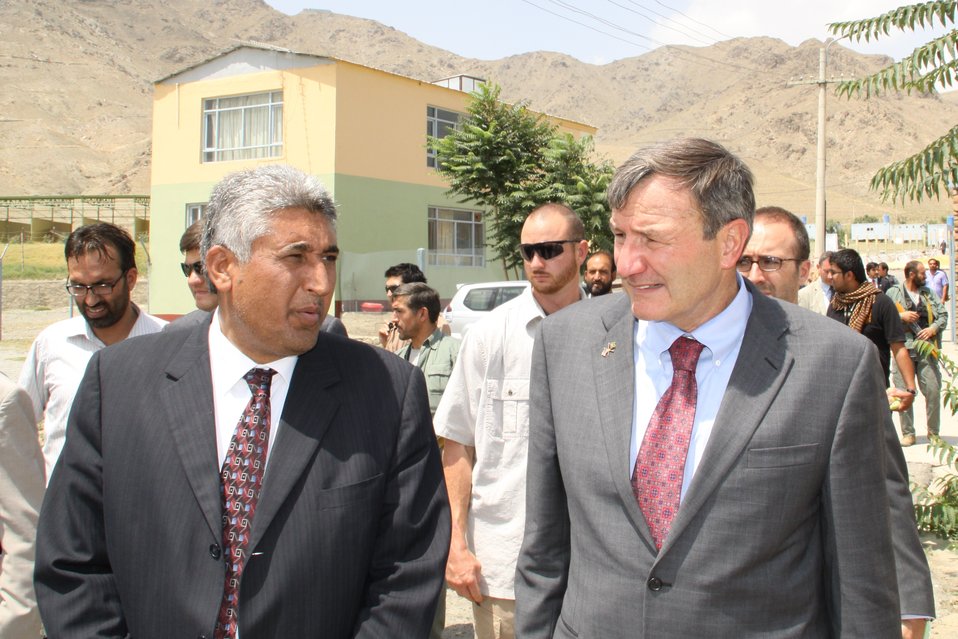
Badam Bagh Farm